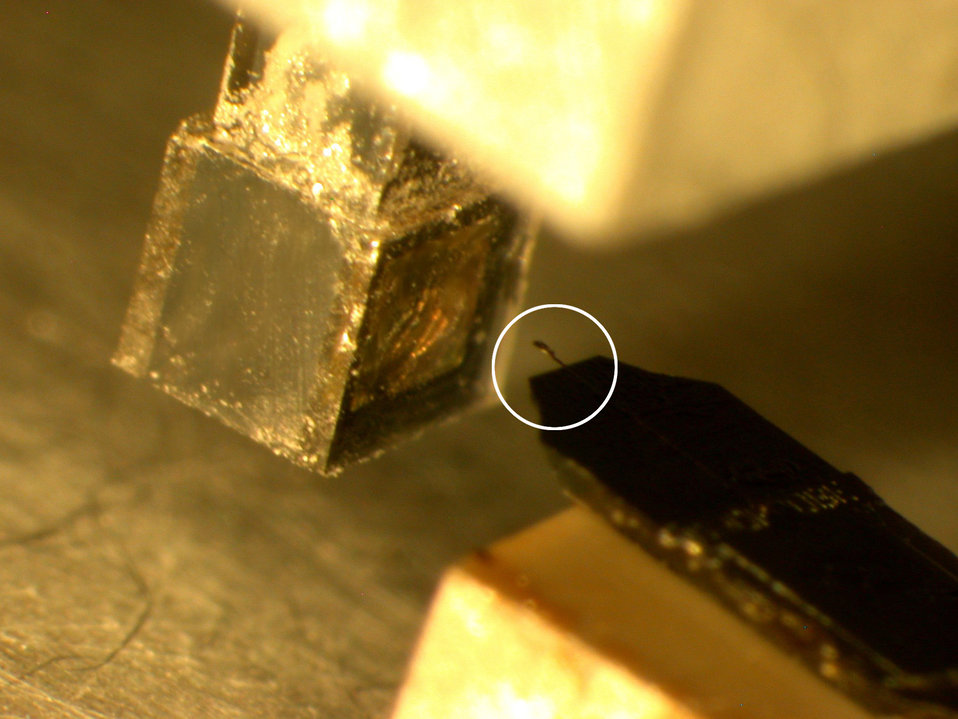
Mechanical Motion Used To 'Spin' Atoms in a Gas

Micro-cantilever experiment demonstrating magnetic coupling of mechanical motion to atomic spin. The approximately 200-micrometer cantilever (circled) has a tiny magnetic particle on the free end. Rubidium atoms are confined in the cubic vapor cell to the left.